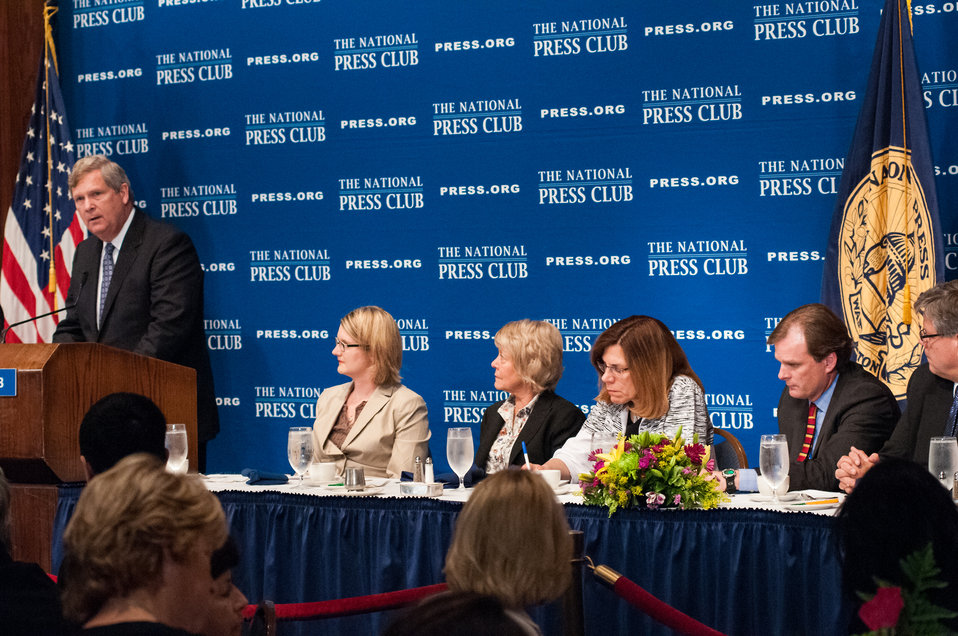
Agriculture Secretary Tom Vilsack discusses the vision for the U.S. Department of Agriculture’s (USDA) future efforts to assist America to adapt to modern environmental challenges at the National Press Club in Washington, D.C. on Wednesday Jun. 5, 2013. (L to R Agriculture Secretary Tom Vilsack, Bloomberg News and National Press Club President Angela Greiling Keane, U.S. Agency for International Development Senior Advisor for International Education Secretary Vilsack’s wife Mrs. Christie Vilsack, National Public Radio Senior Business Editor Marilyn Geewax, and Senior Advisor to Secretary Vilsack Robert Bonnie).